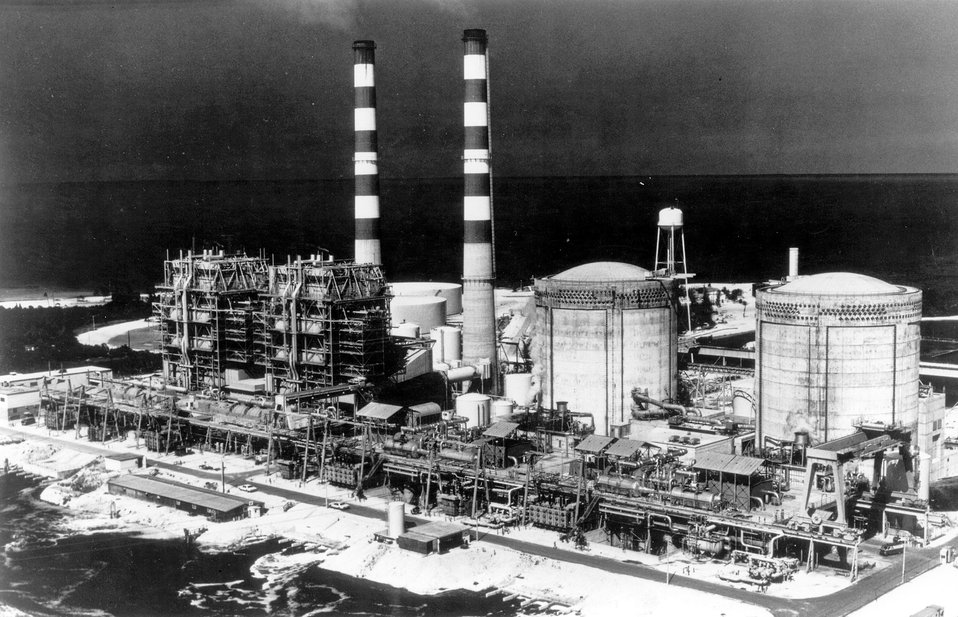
Turkey Point...Aerial view of Florida Power & Light Company's Turkey Point Power Plant in South Dade County, Fla. Circa 1974.